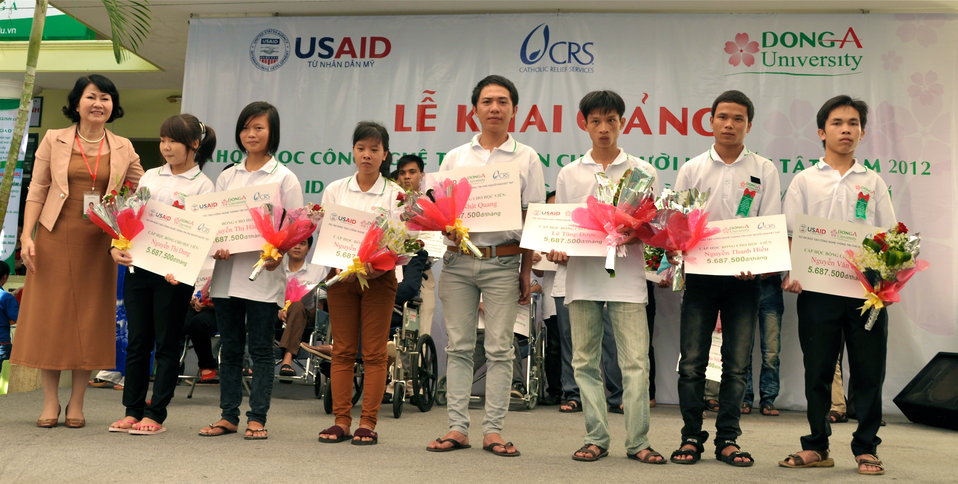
New class of students starts at Dong A Univeristiy with support from USAID and CRS

Photo: @USAIDVietnam
December 3, 2012